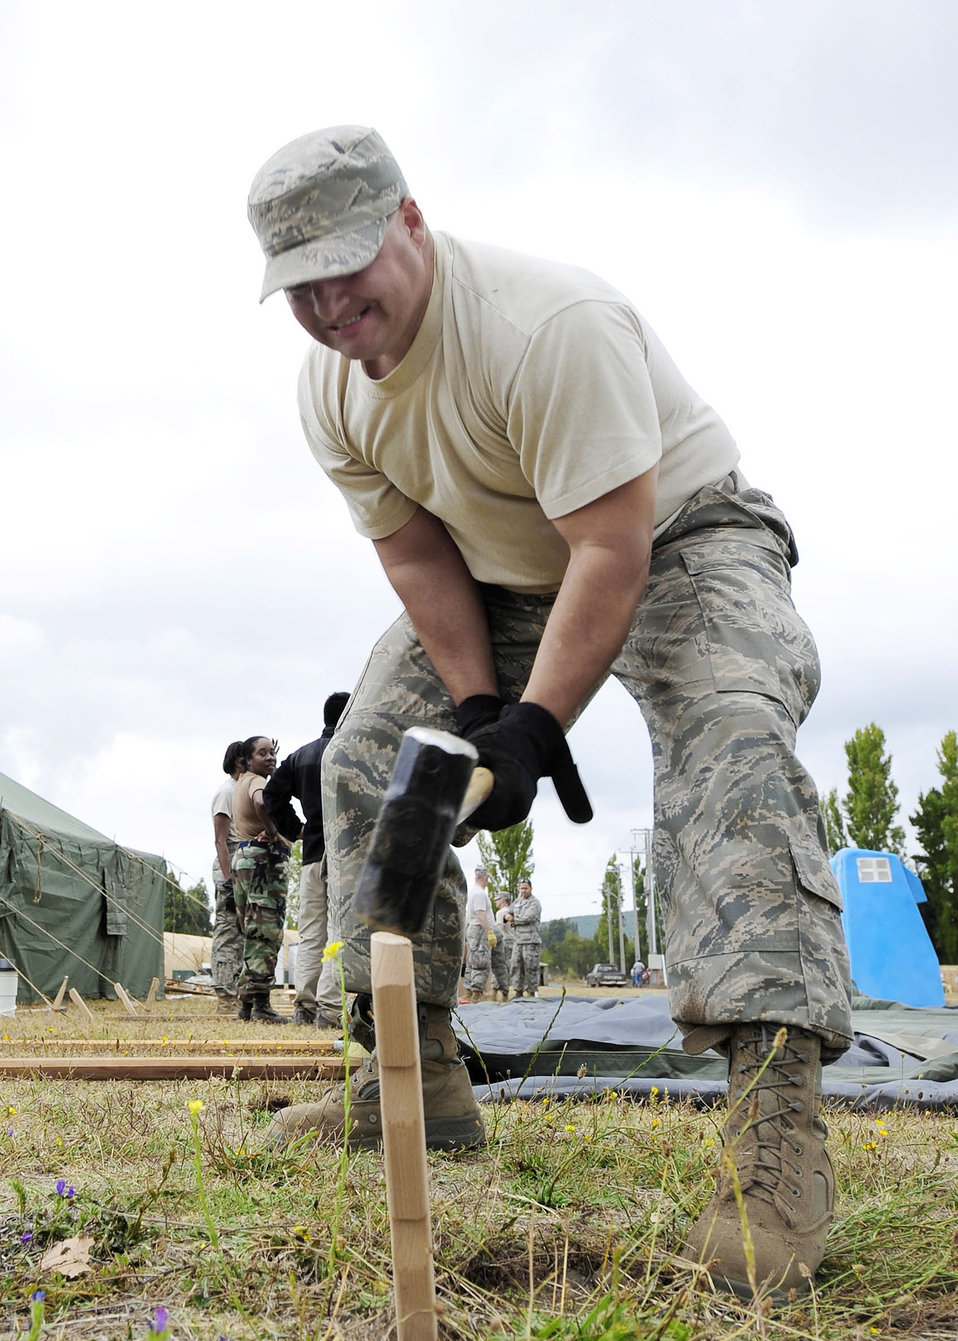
Airmen build EMEDs tents

Master Sgt. Brian Lujan drives a tent stake into the ground March 23, 2010, in Angol, Chile. Sergeant Lujan along with members of an Air Force Expeditionary Medical Support team built 13 shelters that will be used as a hospital for the local Angol community. The hospital will serve as a temporary facility for up to three years until a new hospital can be built in Angol. Sergeant Lujan is assigned to the 355th Civil Engineering Squadron at Davis-Monthan Air Force Base, Ariz.